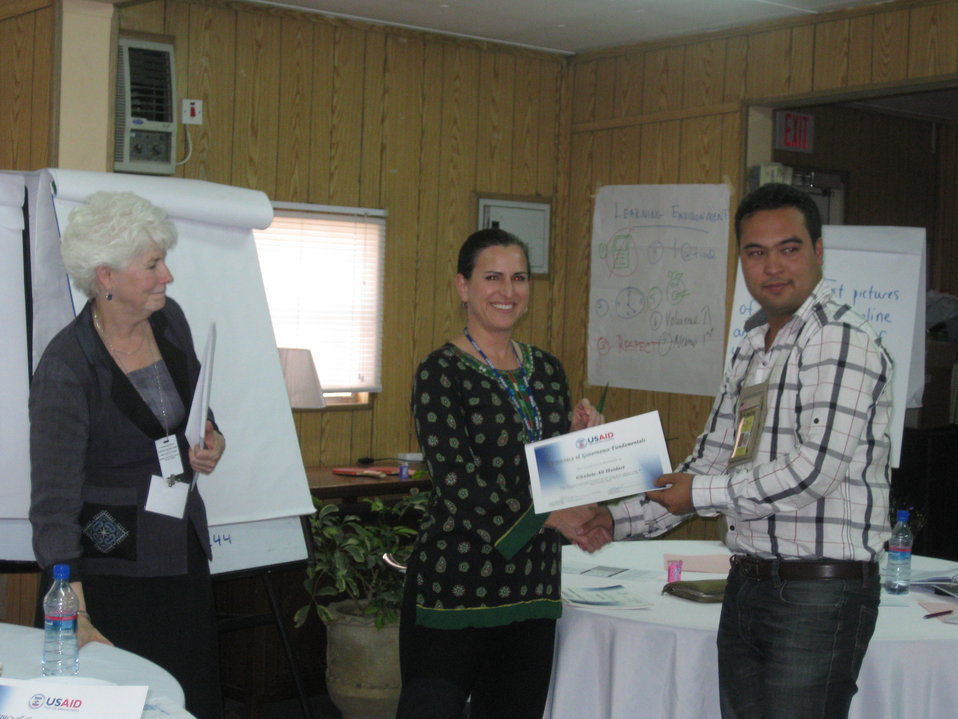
Afghan Youth Voices 058